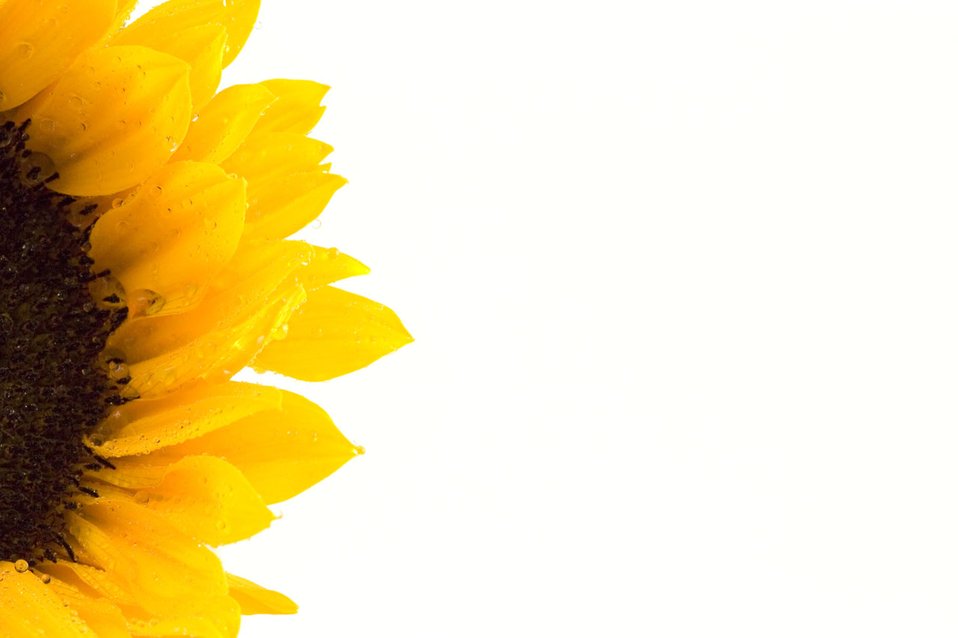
Sunflower

Macro photo of sunflower on white background.